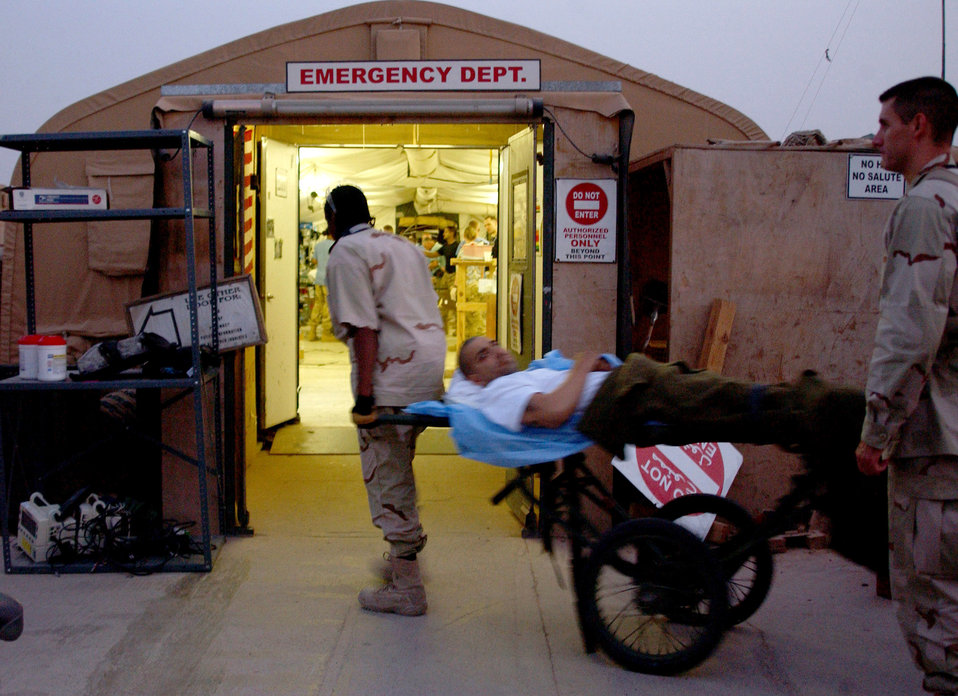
Balad's medics move into new facility

Medics from 332nd Expeditionary Medical Group emergency room and Contingency Aeromedical Staging Facility bring Army Cpl. Erick Rodriguez into the Air Force Theater Hospital's Emergency Room Aug. 3. Corporal Rodriguez sustained abdominal injuries from an improvised explosive device. He was the last patient to be treated in the Air Force Theater Hospital's tent facility. Corporal Rodriguez, assigned to Forward Operating Base Warhorse, is a cavalry scout with the 2nd Infantry Division, deployed from Ft. Lewis, Wash.